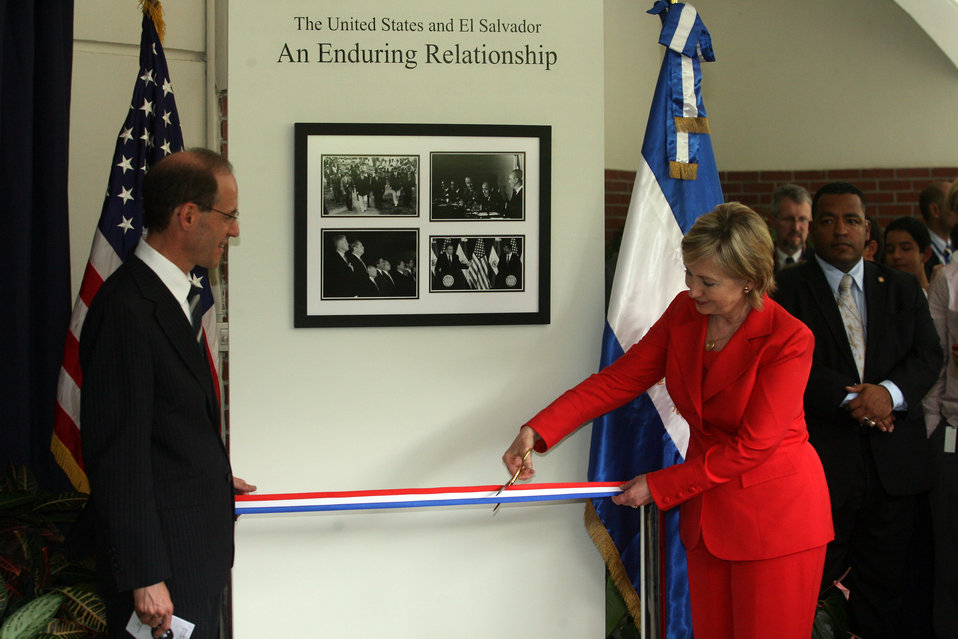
Photo Exhibit: “The United States and El Salvador, An Enduring Relationship'

U.S. Secretary of State Hillary Rodham Clinton cuts the ribbon of a photo exhibit in El Salvador. The exhibit shows pictures of Presidential visits to El Salvador that date 1928.